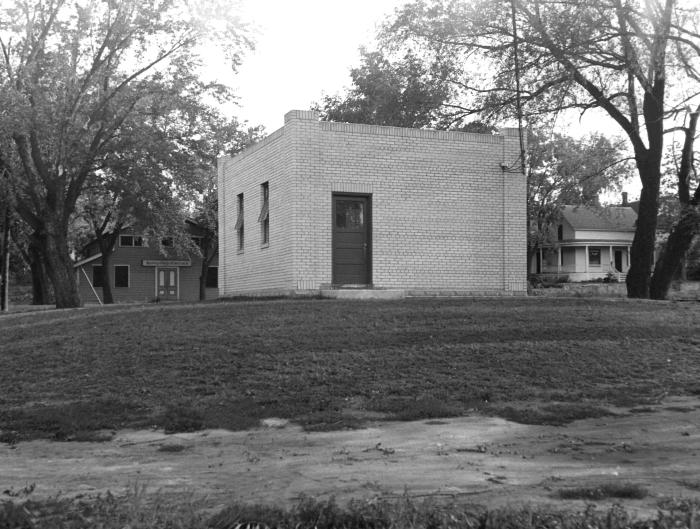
This historic 1934 image revealed the exterior of the Hastings, Minnesota municipal water supply's 'drilled' well pumping station, while PHIL #8479 depicted the interior view of this facility.